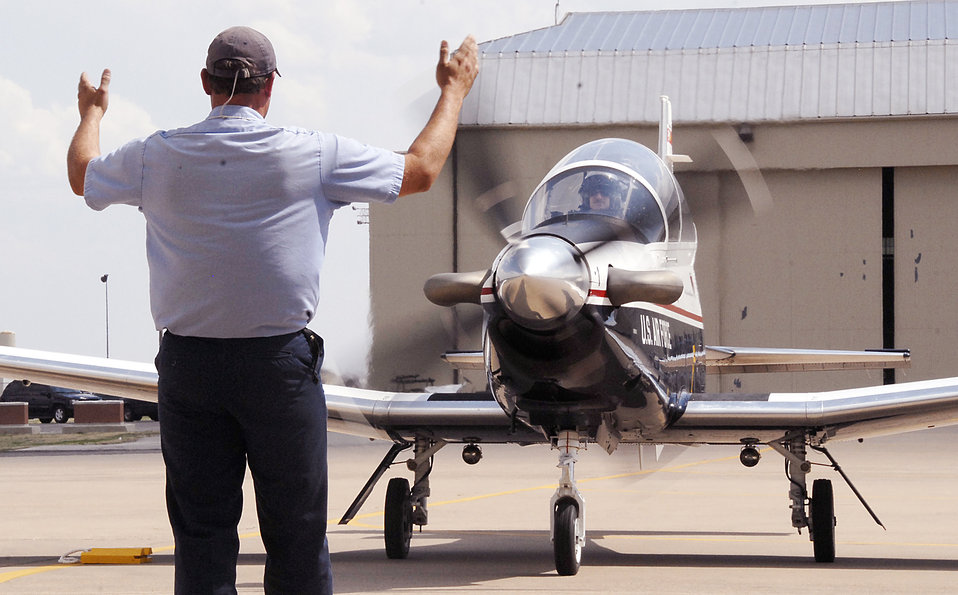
Sheppard replaces T-37s

89th Flying Training Squadron instructor pilot Capt. Brian Wood taxis up to the chocks March 31, marking the official arrival of the T-6A Texan II, the replacement for the antiquated T-37 Tweet, to Sheppard Air Force Base, Texas. Also in the aircraft was Italian Brig. Gen. Franco Marsiglia, the incoming Euro-NATO Joint Jet Pilot Training Program Steering Committee chairman. A total of 69 T-6s will replace 74 T-37s.